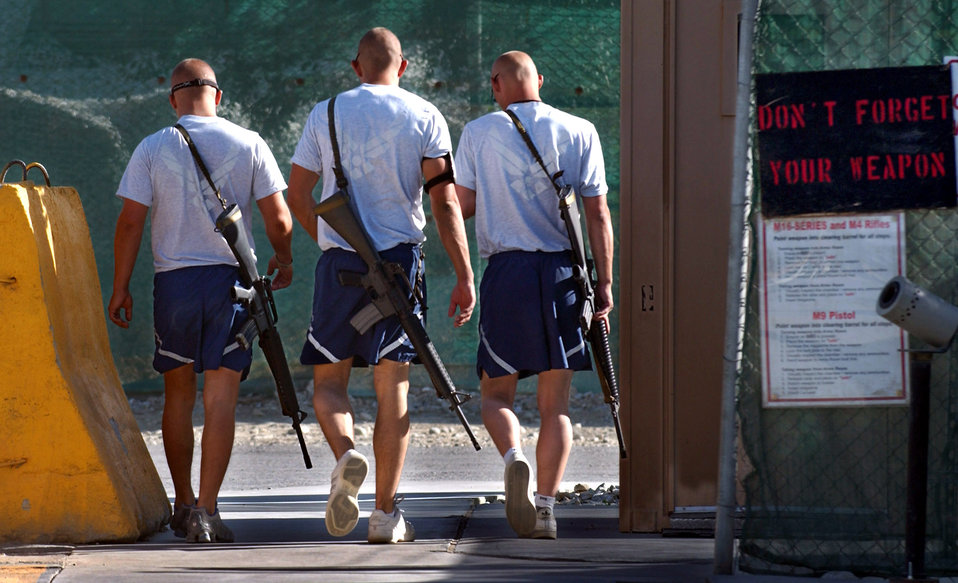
We're ready

Even when they're on their way to exercise, Airmen at Bagram Air Base, Afghanistan, are ready for anything.